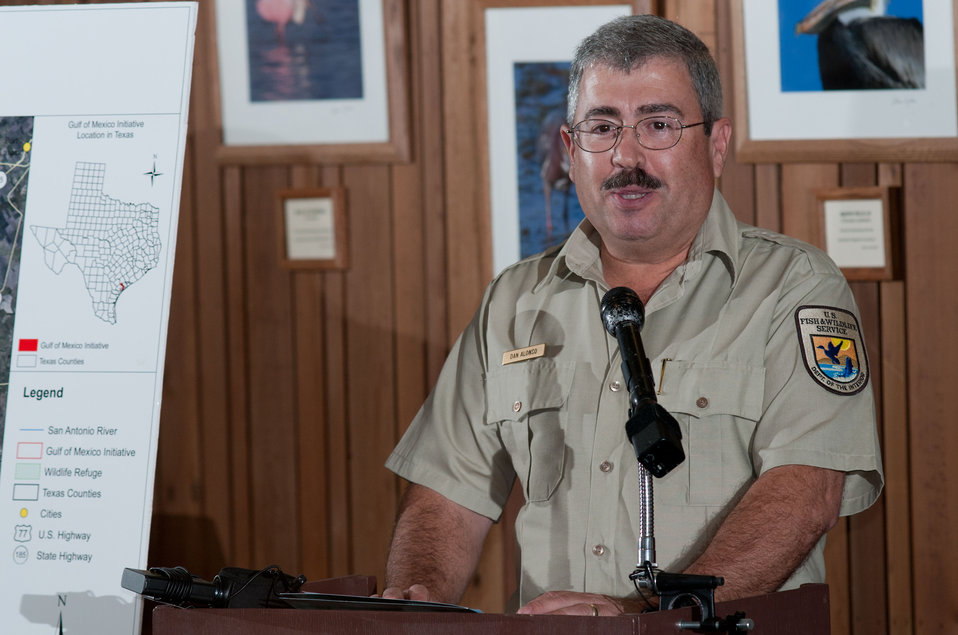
U.S. Department of the Interior, Fish and Wildlife Service Aransas National Wildlife Refuge Manager Dan Alonso gave background information about the 115,000-acre refuge that was established in 1939, during the roll out the Gulf of Mexico Initiative (GOMI) in Texas, at the refuge's visitor center in Austwell, TX, on Friday, Dec. 16, 2011. The Aransas Refuge is a 15,000-acre wildlife sanctuary established in 1939. Its fresh water comes from the San Antonio River, which flows by the historic Alamo southeasterly towards the Guadalupe River at the estuary of San Antonio Bay, the primary body of water for the refuge.